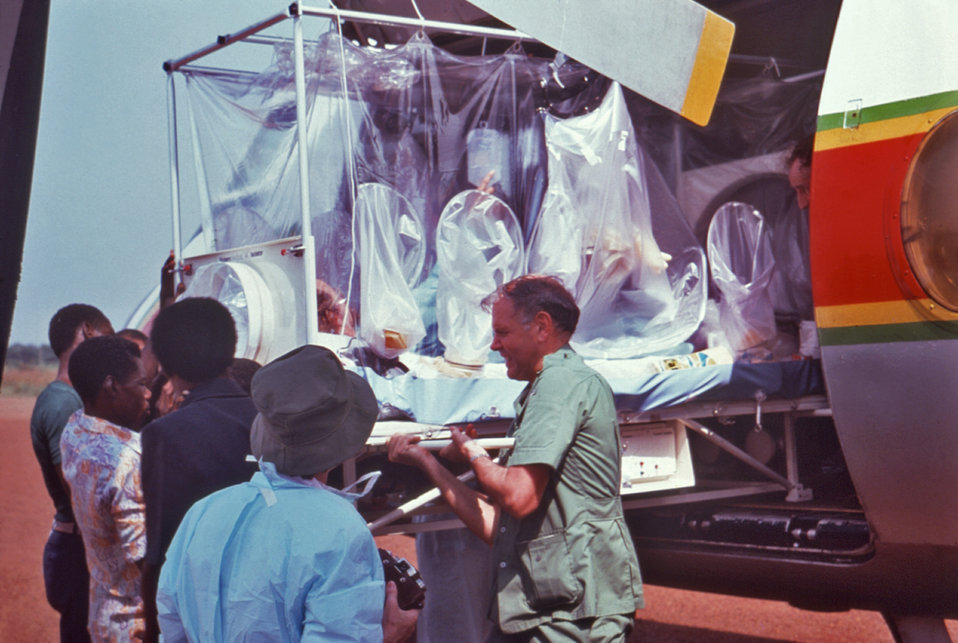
This 1976 photograph shows CDC staff member Dr. Stan Foster (Rt), standing outside of a plane in Zaire, assisting in the boarding (or disembarkation) of Peace Corps volunteer, Del Conn, a suspected Ebola patient.